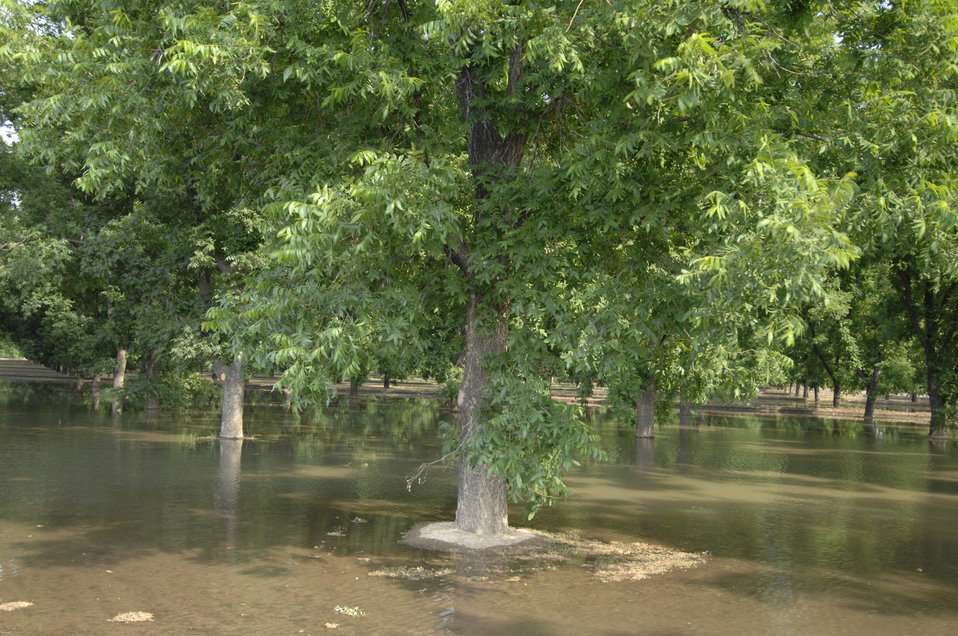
The U.S. Department of Agriculture's (USDA) Cooperative State Research, Education, and Extension Service (CSREES) administers the Rio Grande Basin Initiative (RGBI) in New Mexico in cooperation with the Texas AgriLife Extension Service, Texas AgriLife Research, the College of Agriculture and Life Sciences at Texas A&M University, and New Mexico State University on June 2, 2008. This project addresses water management throughout the Rio Grande Basin, bringing together research, extension, and education efforts to address local, state, regional, national, and international water concerns. Unlike the cement-lined canals that prevent leeching, the earthen acequias allow seepage into groundwater. Acequias are the traditional irrigation ditches or canals in New Mexico. Research has found that the seepage is not wasted but has an added benefit to the environment. The seepage promotes riparian buffers, cleaner groundwater and a more efficient storage of water.